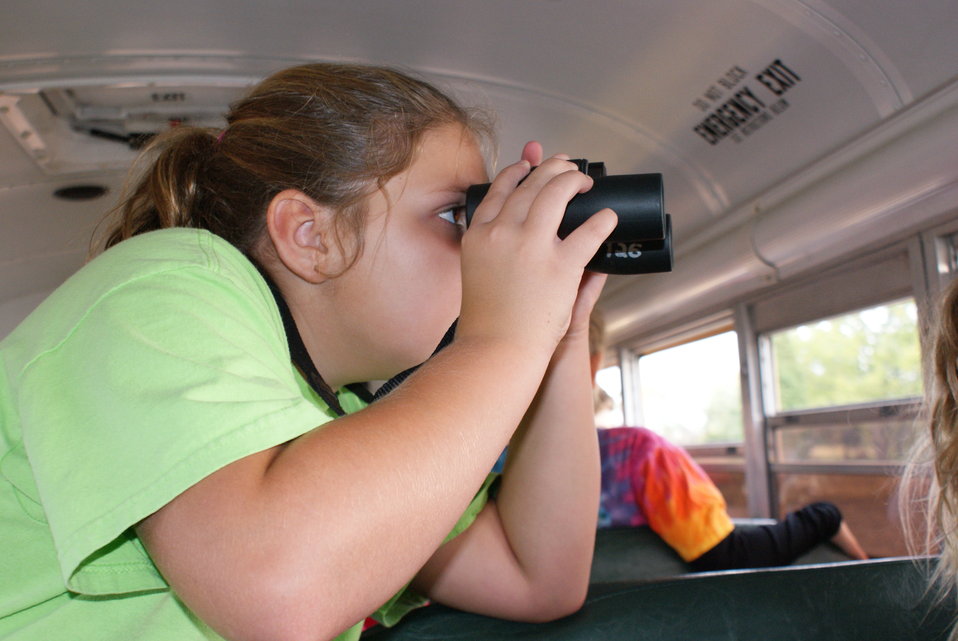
Environmental education

Child viewing wildlife at Blackwater National Wildlife Refuge.